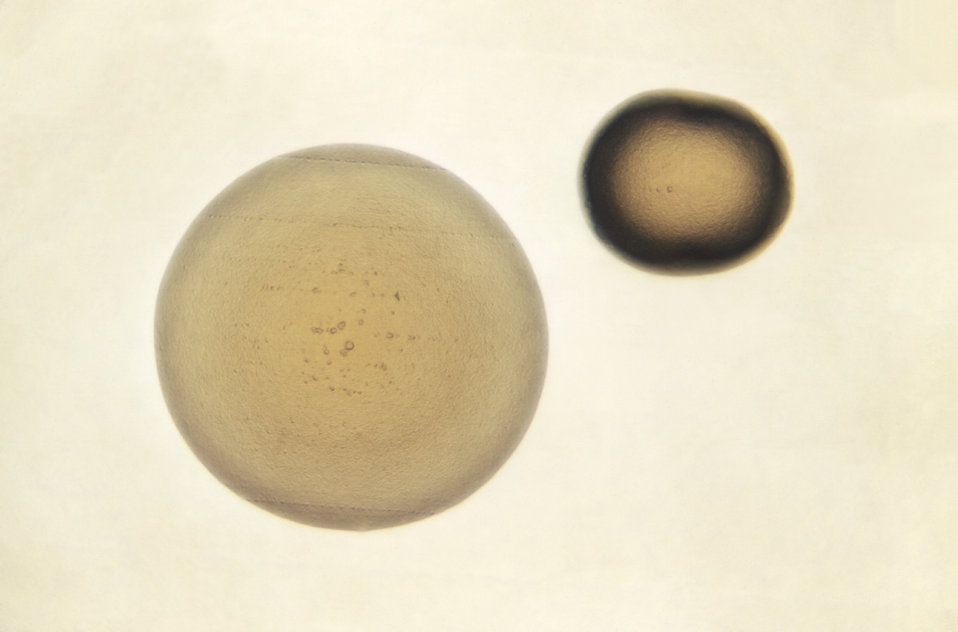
This 1972 image depicted the morphologic appearance of Neisseria gonorrhoeae colonies after having grown for a period of 24 hours on GC media base agar supplemented with IsoVitaleX. These were photographed here at a magnification of 50X. GC media base agar is used in the isolation of N. gonorrhoeae bacteria, and is often used in conjunction with various antibiotics, in order to determine N. gonorrhoeae antimicrobial sensitivity/selectivity.What is gonorrhea?